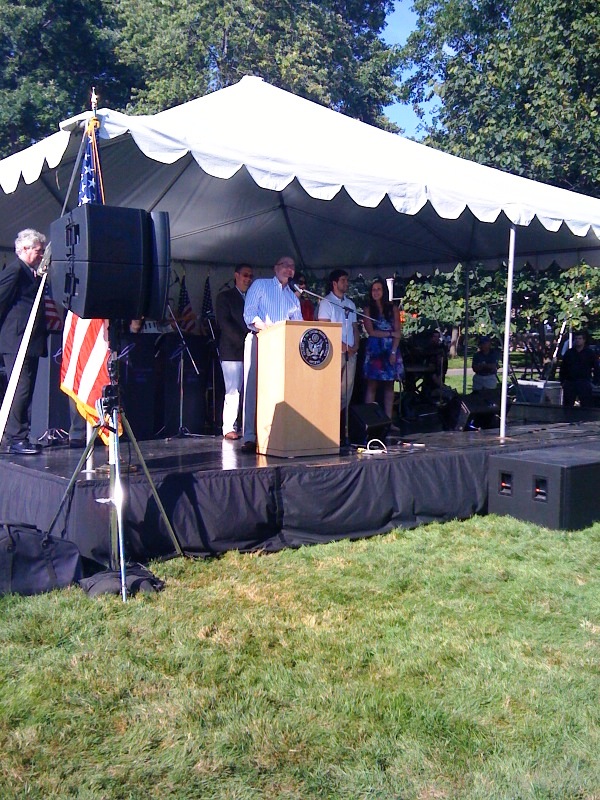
Ambassador Jacobson Delivers Remarks

U.S. Ambassador to Canada David Jacobson delivers remarks during the U.S. Independence Day celebration at the Ambassador's residence Ottawa, Canada, on July 4, 2010.